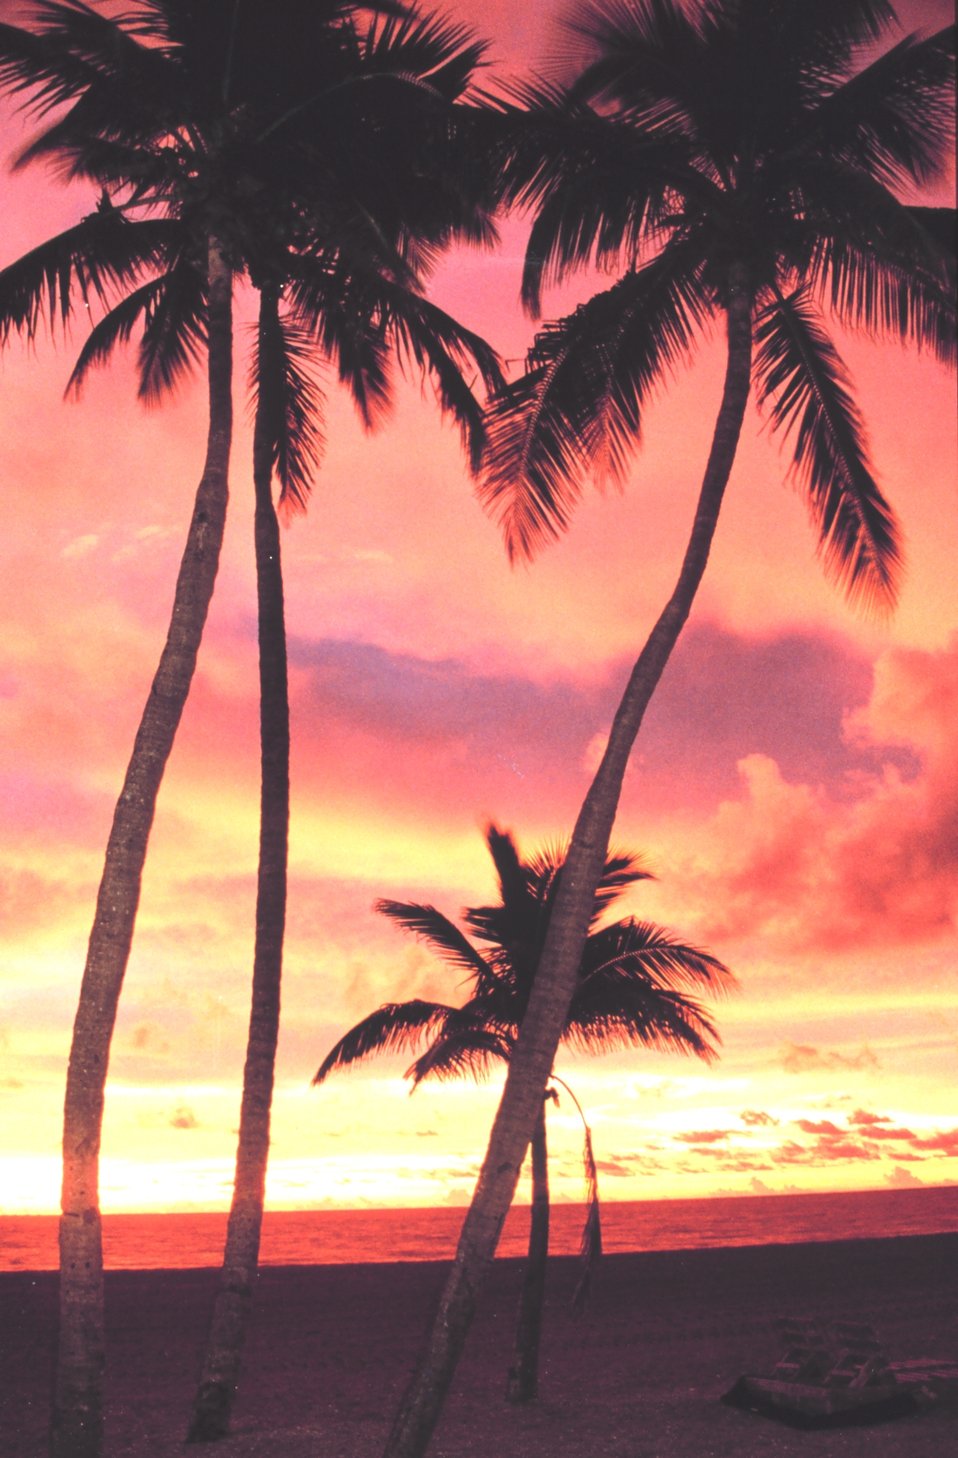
Sunset near Fort Lauderdale